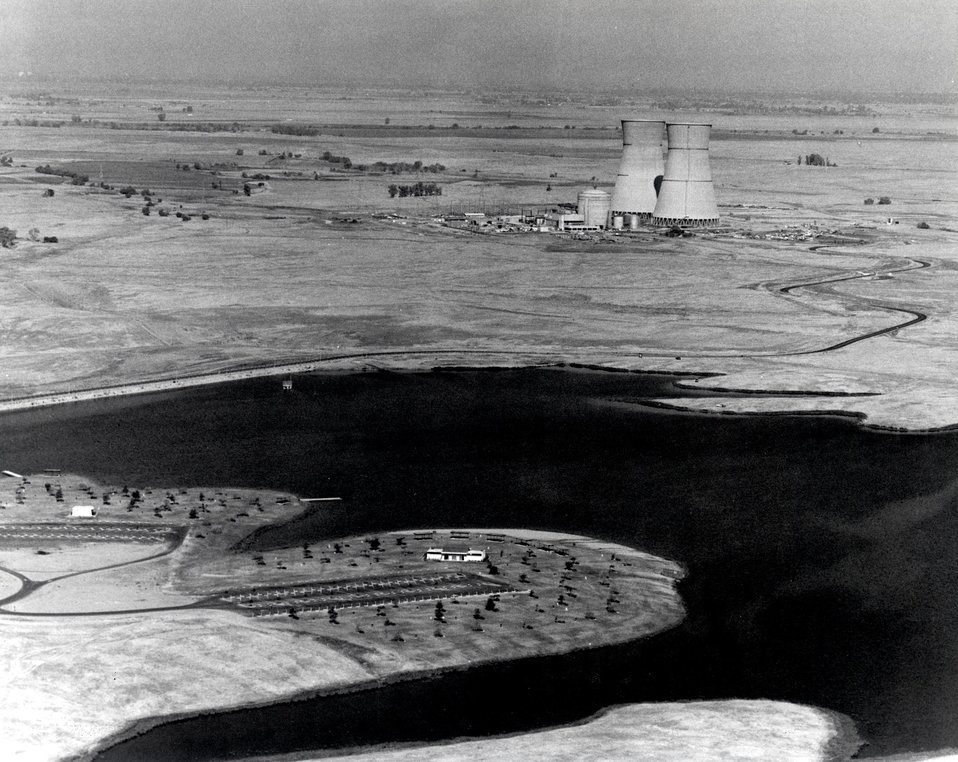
Rancho Seco Nuclear Generating Station, Unit 1, near Clay Station, California. The Sacramento Municipal Utility District's generating station employs a Babcock & Wilcox pressurized water reactor and will generate 913,000 Kw electric. Circa 1974.